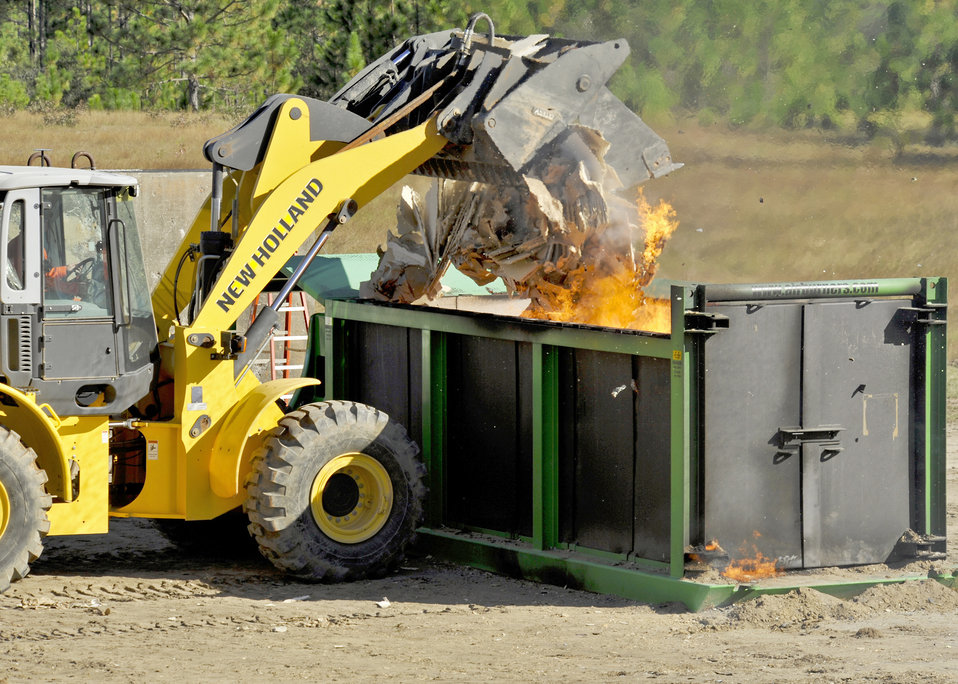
Air burners at Eglin

Another load of wood waste is dropped into the 46th Test Wing's new air curtain incinerator Oct. 31, 2010, at Eglin Air Force Base, Fla. The air burner destroys test materials used to detect direction and velocity of bomb explosion fragments. The burner consumes massive amounts of the wood waste quickly and minimizes the amount of pollutants released.